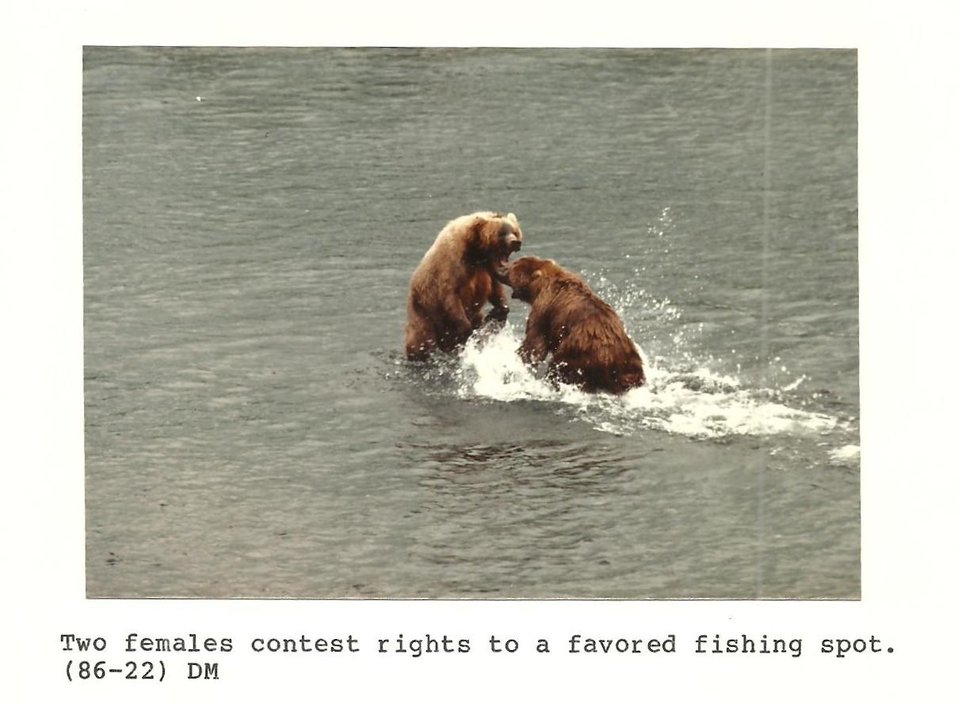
(1986) Bear Fight

Credit: USFWS

Source and Contact: Kodiak National Wildlife Refuge